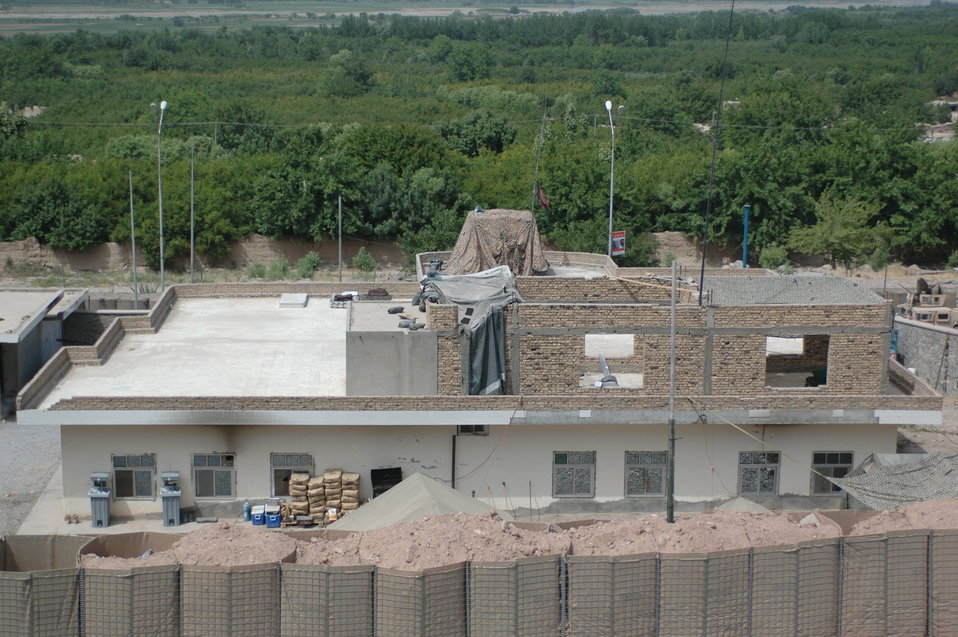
Dr Shah Visits Kandahar April 9, 2010